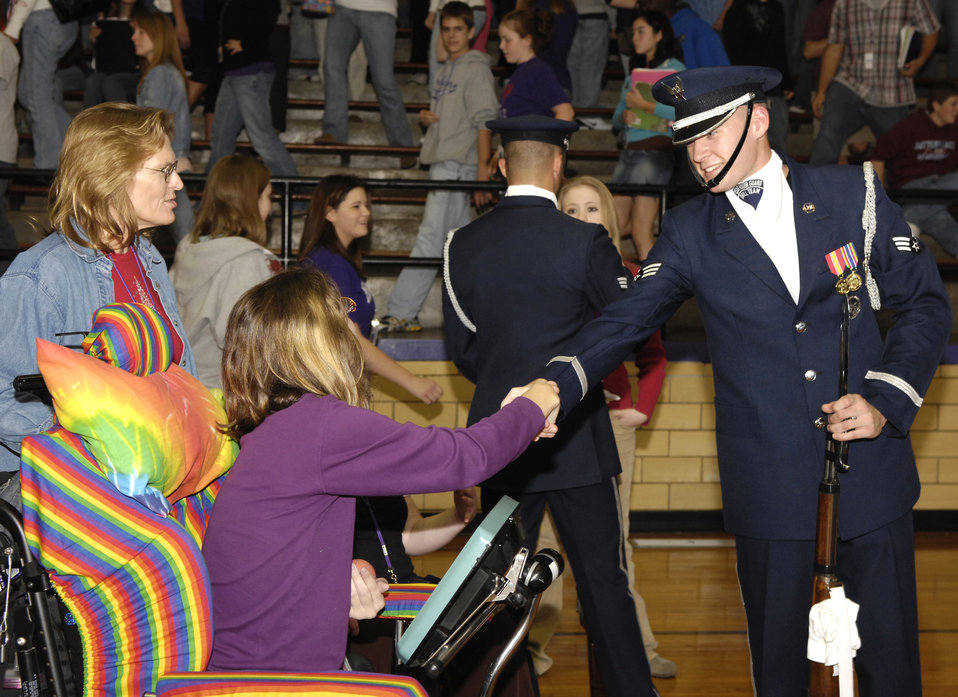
Airman inspiration

Senior Airman Jason Martin speaks with students Dec. 12 at Mascoutah High School in Mascoutah, Ill. He is a member of the U.S. Air Force Honor Guard Drill Team. The Drill Team travels stateside and abroad performing drills for public and military audiences to recruit and inspire current and future Airmen.